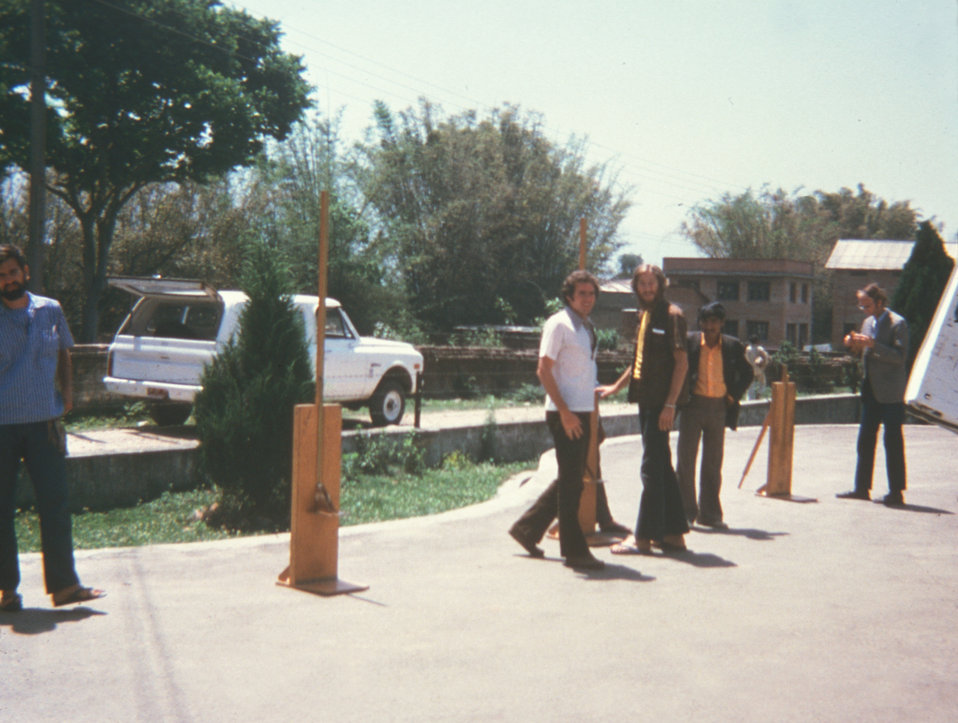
Former members of the Peace Corps and others in the area, helped with CDC smallpox eradication field activities in Nepal.